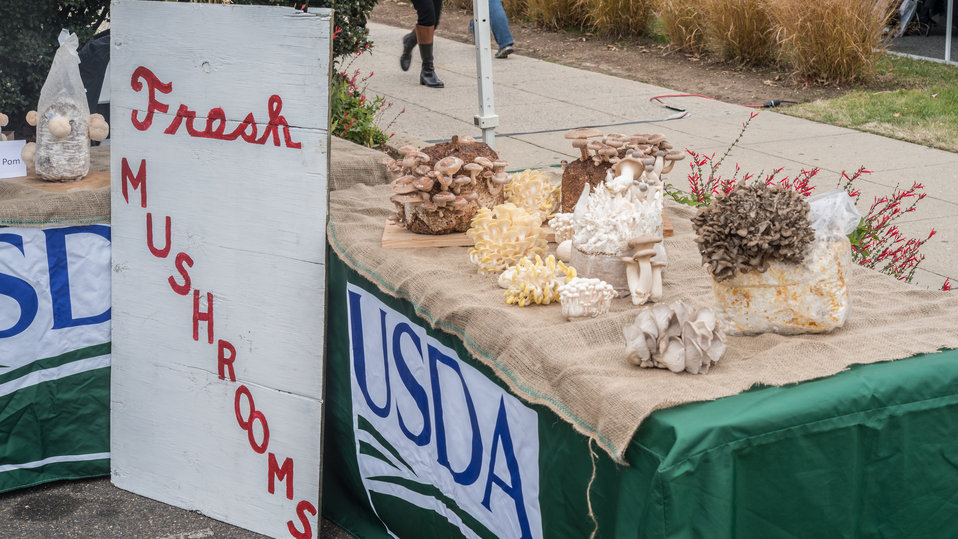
Pom pom (round) mushrooms (left of sign) and on the right table left - right, shitake mushrooms growing on sawdust and cereal log, yellow oyster (yellow and white), pom pom (egg shaped), beech (small cap), royal trumpet (large stem), maitake (dark brown on plastic wrapped growing log, and oyster (light gray) mushrooms Yellow oyster (yellow and white), pom pom (egg shaped), beach (small cap), royal trumpet (large stem), maitake (dark brown on plastic wrapped growing log, and oyster (light gray) mushrooms on display at the U.S. Department of Agriculture (USDA) farmers markets and Harvest Festival at the USDA Whitten Building east parking lot in Washington, DC, on Friday, November 22, 2013.